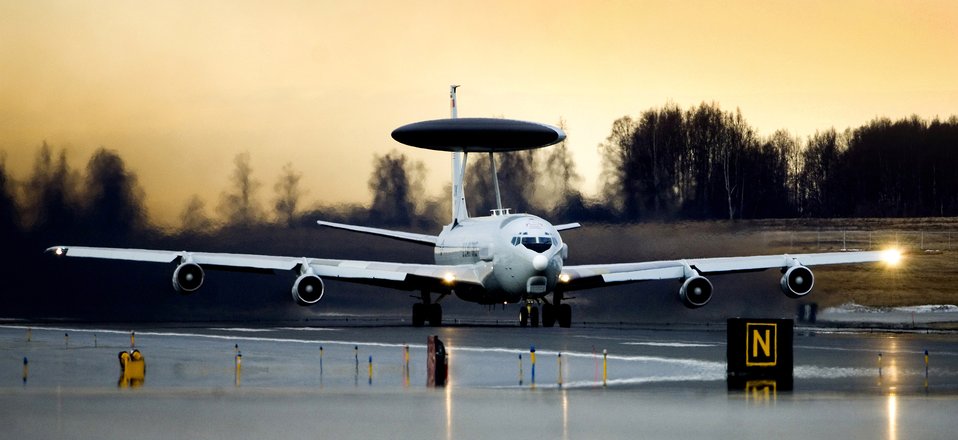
Airmen honor 30 years of AWACS

An E-3 Sentry Airborne Warning and Control System aircraft prepares to take off at Elmendorf Air Force Base, Alaska. The first E-3 rolled out of the Boeing factory on Feb. 1, 1972, and AWACS aircraft have been providing continuous air surveillance and command and control ever since.